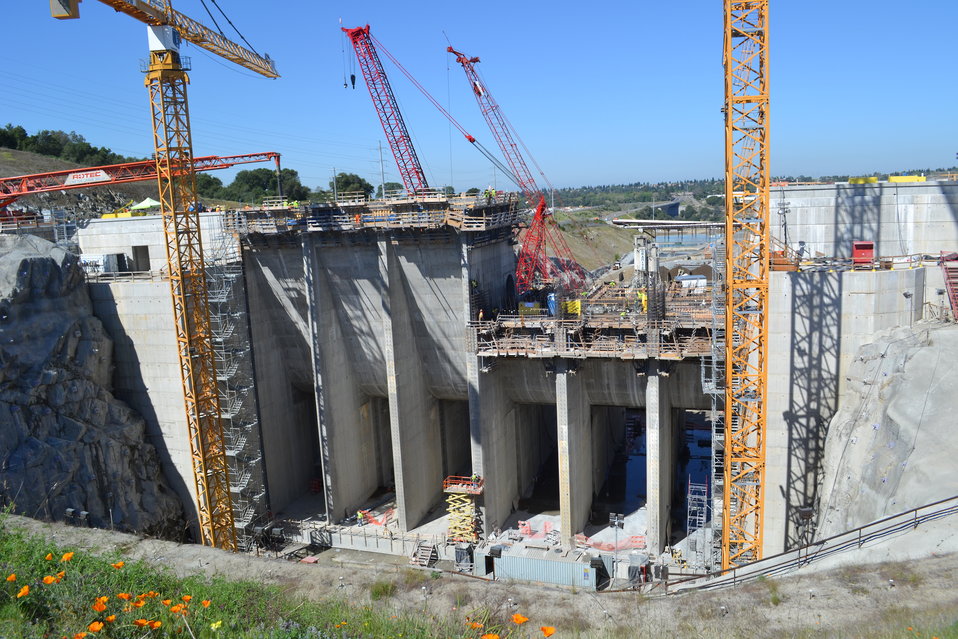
Hungarian engineers visit Folsom Dam auxiliary spillway

View of the lake side of Folsom Dam auxiliary spillway as seen by group of Hungarian engineers representing the Floodplain Management Association during briefing and site tour on April 10, 2014. The project is scheduled to be completed by October 2017 and is the centerpiece of a broader multi-agency effort to modernize Sacramento's flood control infrastructure and reduce flood risk for the region.